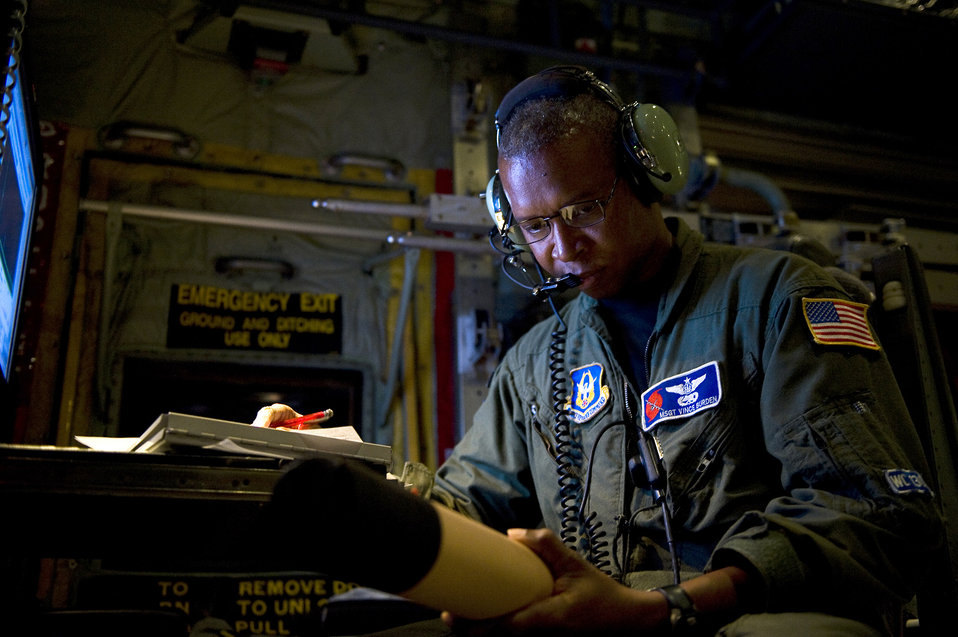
Logging data

Master Sgt. Vince Burden logs the dropsonde serial number onboard a WC-130J Super Hercules over the Atlantic Ocean while tracking tropical storms Sept. 17, 2010. The dropsonde is a GPS instrument that measures weather data and relays it back to the aircraft. Sergeant Burden is a loadmaster with Air Force Reserve Command's 53rd Weather Reconnaissance Squadron at Keesler Air Force Base, Miss.